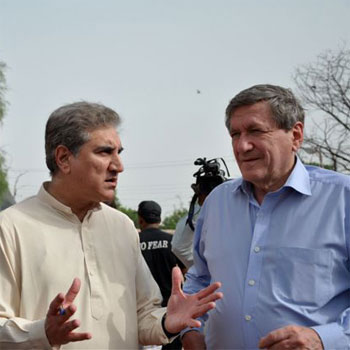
Pakistani Foreign Minister Qureshi and Special Representative Holbrooke Visit the Shah Rukn-e-Alam Shrine

Pakistani Foreign Minister Shah Mehmud Qureshi and U.S. Special Representative for Afghanistan and Pakistan Richard C. Holbrooke visit the Shah Rukn-e-Alam shrine in Multan, Pakistan, on September 16, 2010.